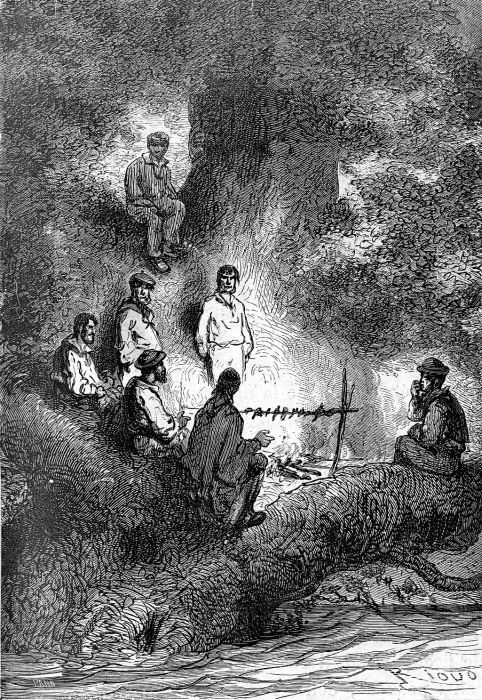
An ilustration from the novel 'In Search of the Castaways; or Captain Grant's Children' by Jules Verne drawn by Édouard Riou. Polski: Ilustracja powieści Juliusza Verne'a 'Dzieci kapitana Granta' autorstwa Édouarda Riou. Français : 'Les Enfants du capitaine Grant', Édouard Riou. Français : « Il y avait une fois, dit Paganel… »